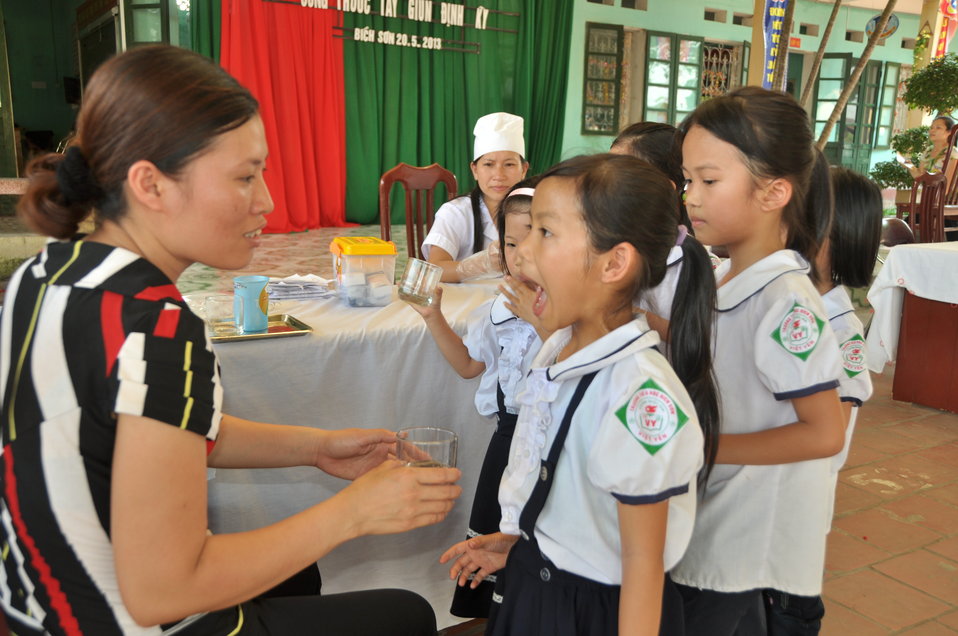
USAID supports deworming education and medication distribution in Bac Giang Province

May 20, 2013